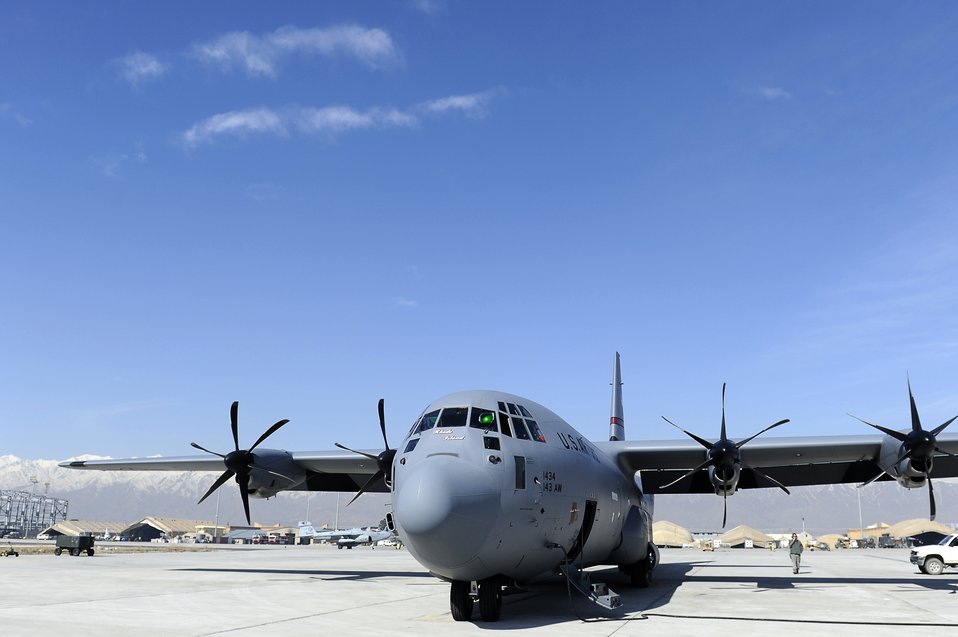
C-130J delivers supplies over Afghanistan

A C-130J Super Hercules deployed from the Rhode Island National Guard waits to go on the supply mission at Bagram Airfield, Afghanistan, March 2, 2010.